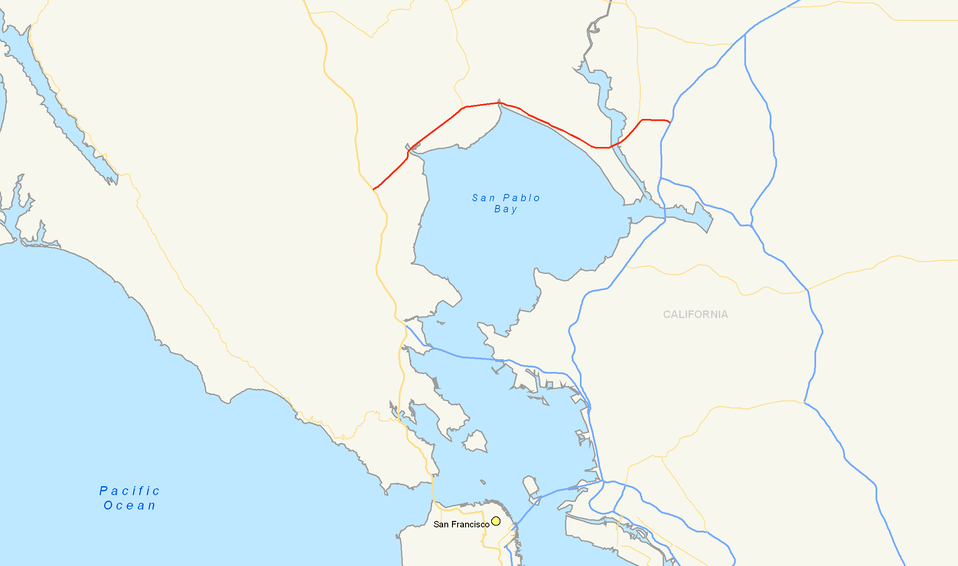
Map highlighting California State Route 37 around San Pablo Bay, in Northern California.